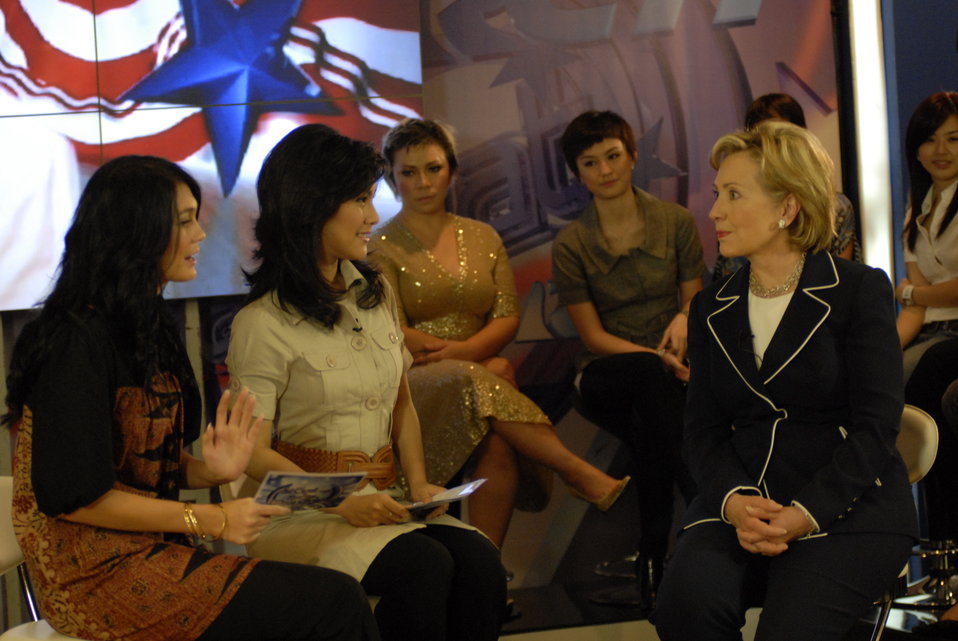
Secretary Clinton on Indonesian 'Dahsyat' TV Show

Hosts Luna Maya (left) and Isyana Bagoes Oka (center) interviews U.S. Secretary of State, Hillary Clinton on top rated Indonesian youth variety show “Dahsyat” (“Awesome”) in Jakarta, Indonesia February 19, 2009.